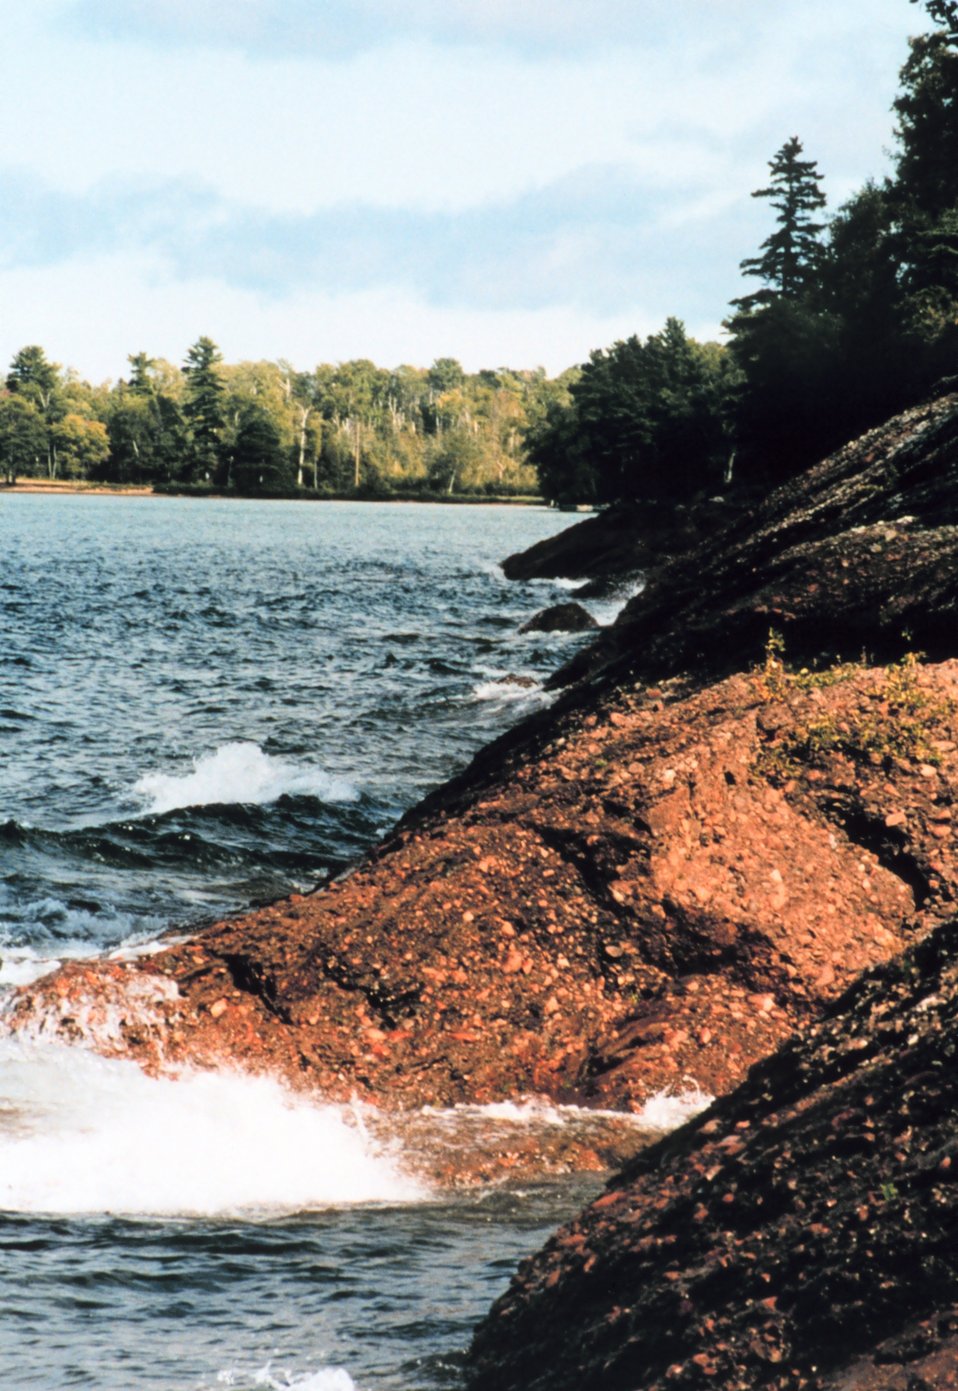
Houghton County